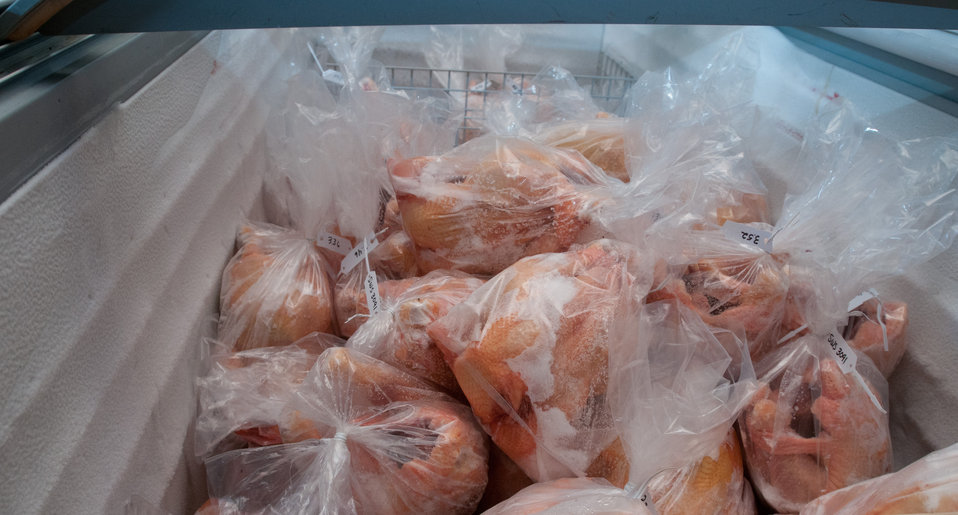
Frozen hens produced at Nick’s Organic Farm, in Adamstown, MD, on Friday, July 12, 2013. The farm, owned by Nick Maravell, produces Black Angus beef, chicken, turkey, eggs, hay, soybeans, corn, alfalfa, orchard grass, rye; and other crops. The cattle are100% grass-fed receiving certified organic pasture, certified organic hay (in winter), water and mineral salts mixed with sea kelp. The cattle are not fed hormones, antibiotics or animal products. Poultry feed from grain is ground from organic grain. The poultry also graze on organic pastures. The farm has conducted on-farm research with federal, state and non-profit agencies to refine organic practices.